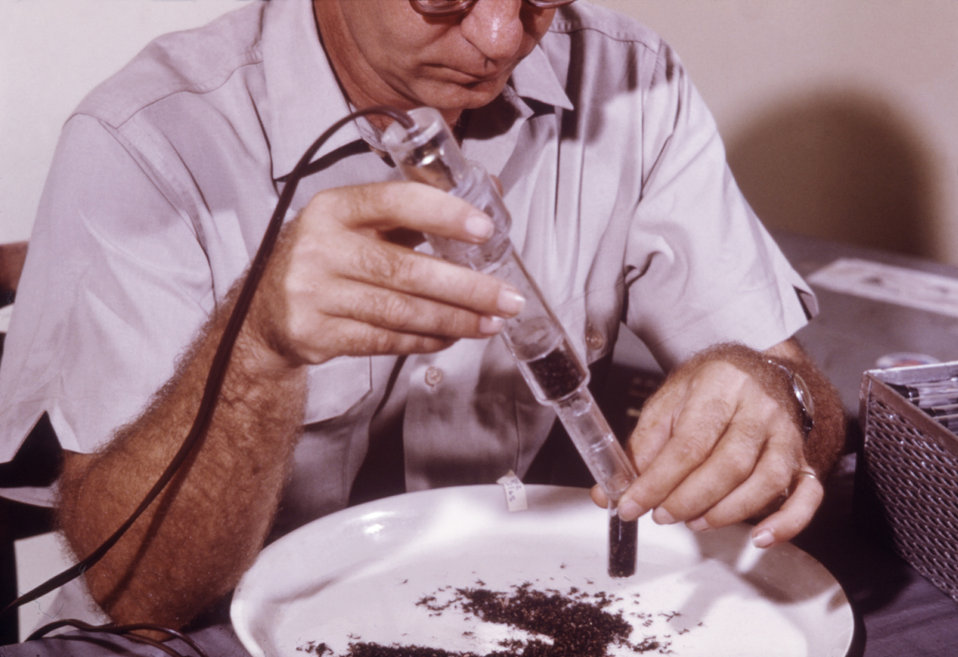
This field researcher is shown unloading a collection of mosquitoes from a mechanical aspirator into a test tube.